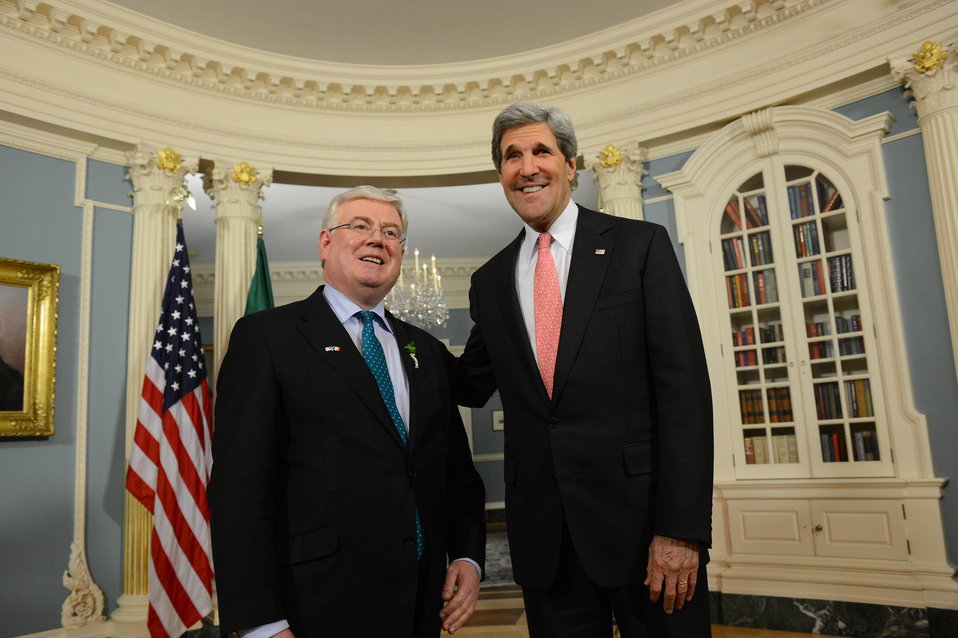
Secretary Kerry Meets With Tánaiste Eamon Gilmore

U.S. Secretary of State John Kerry meets with Tánaiste Eamon Gilmore at the U.S. Department of State in Washington, D.C., on March 18, 2013.